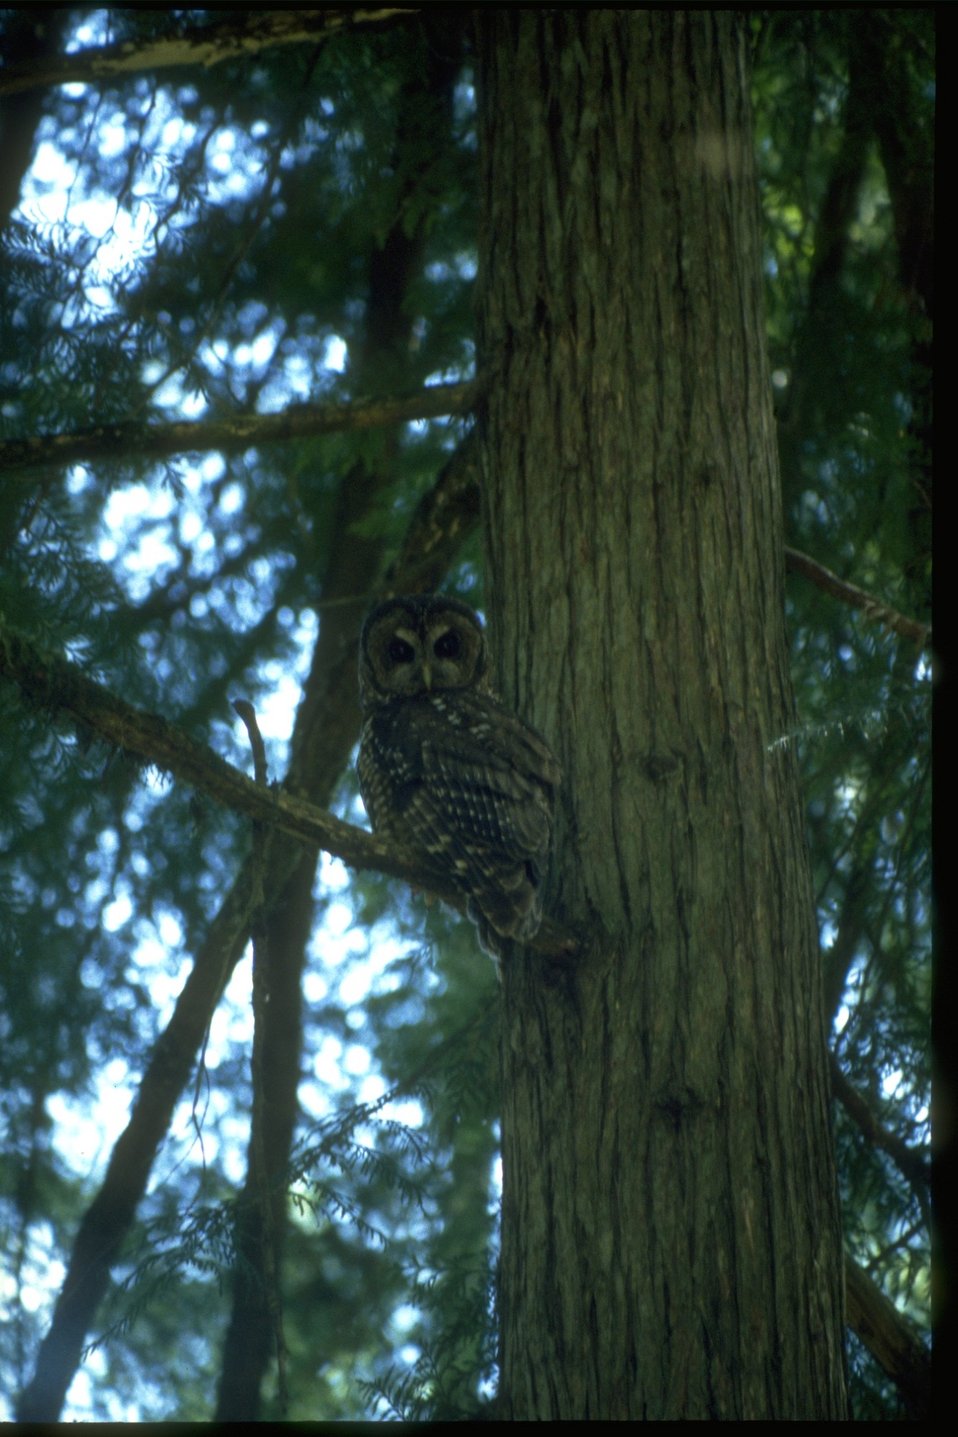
Northern Spotted Owl perched on a branch.